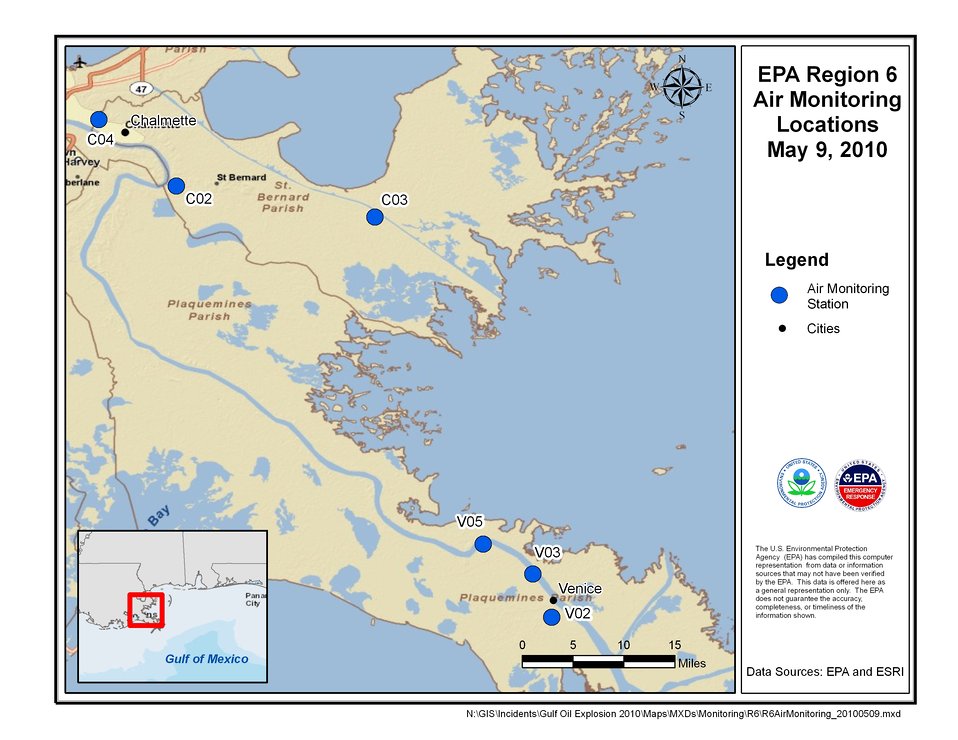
EPA Air Monitoring Locations May 9, 2010